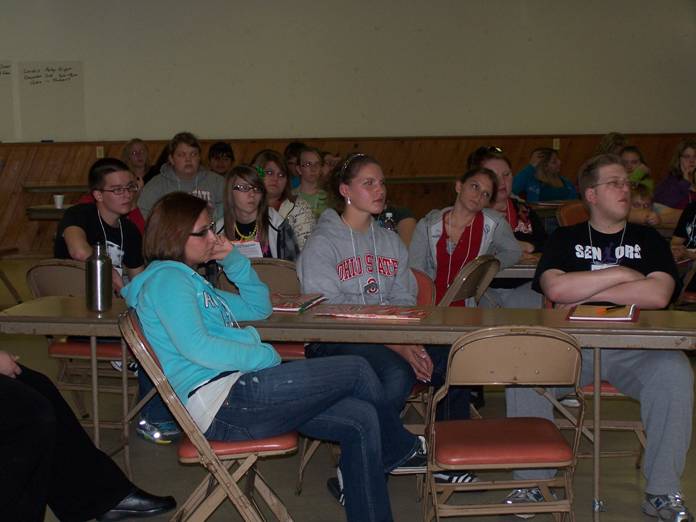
LAUNCH inc. Event in Jackson, OH

Dr. Natasha Slesnick, NIDA Grantee during NDFW and the event hosted by LAUNCH inc. in Jackson, OH